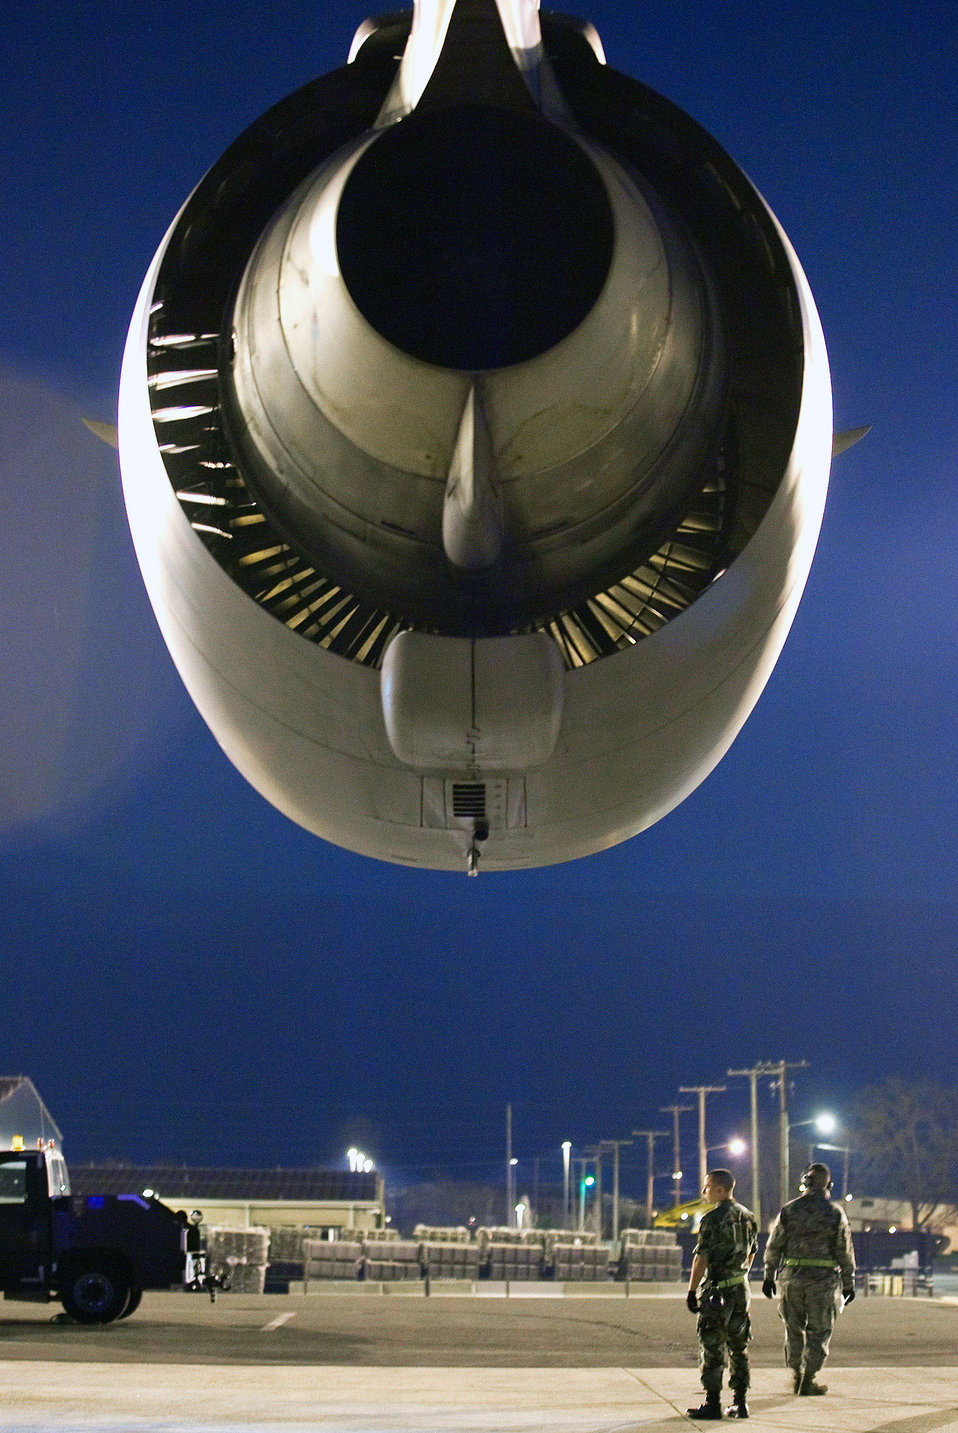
It's a small world...

Two maintainers stand ready, waiting for fellow maintenance crews on the flightline April 9 at Dover Air Force Base, Del. The combined efforts of Dover's C-17 and C-5 maintenance crews keep the base's Galaxy, Super Galaxy and Globemaster III aircraft in the sky.